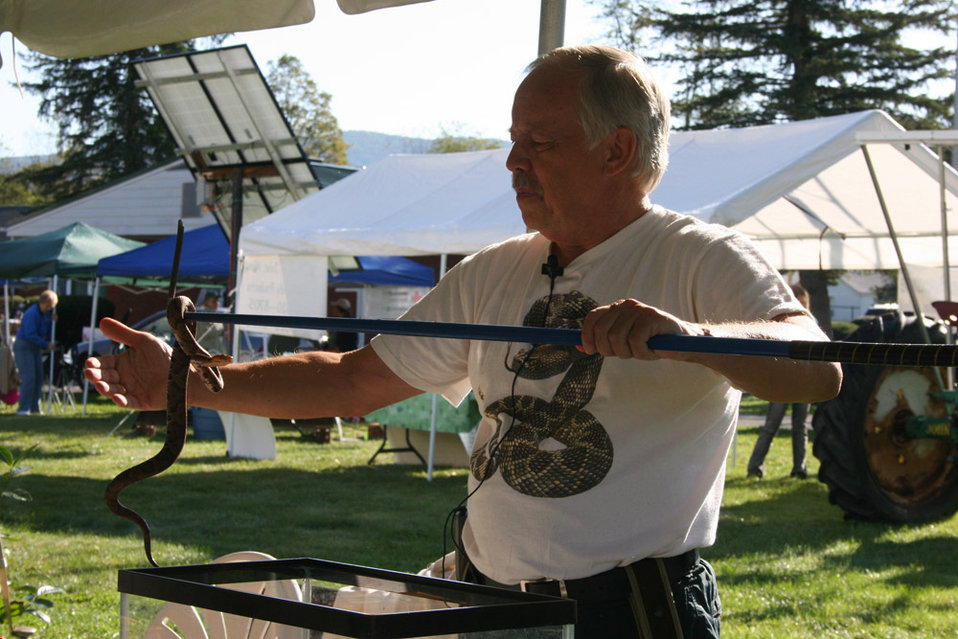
Freshwater Folk Festival (6)